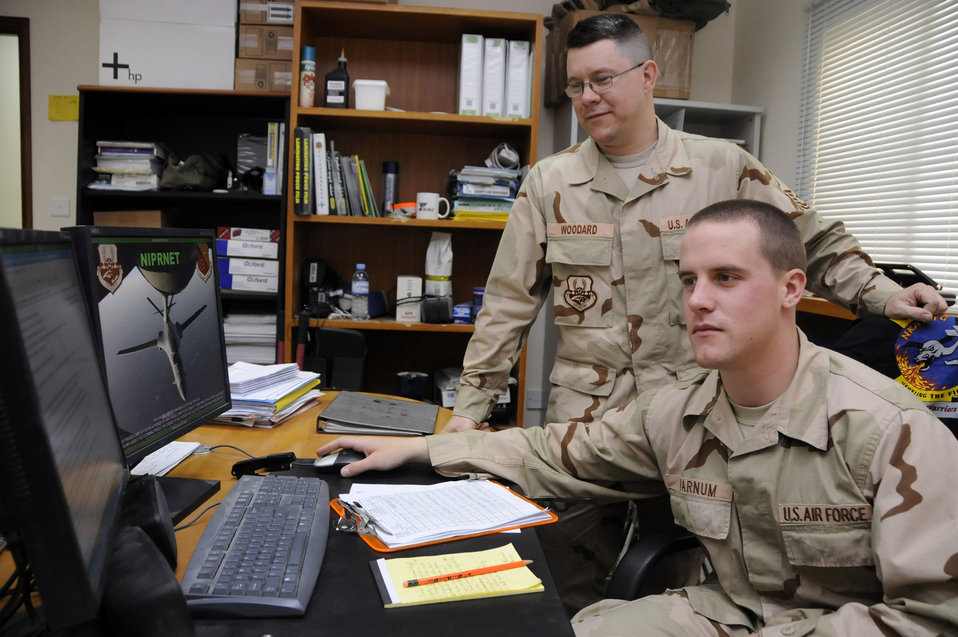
Cadets experience real-world deployment

Master Sgt. Brian Woodard instructs Air Force Academy Cadet Nick Varnum on how to complete dorm validations for deployment June 18 at a base in Southwest Asia. Sergeant Woodard is the 340th Expeditionary Air Refueling Squadron first sergeant. The cadets are visiting the base as part of the academy's Operation Air Force program, allowing them to experience an active-duty deployment.